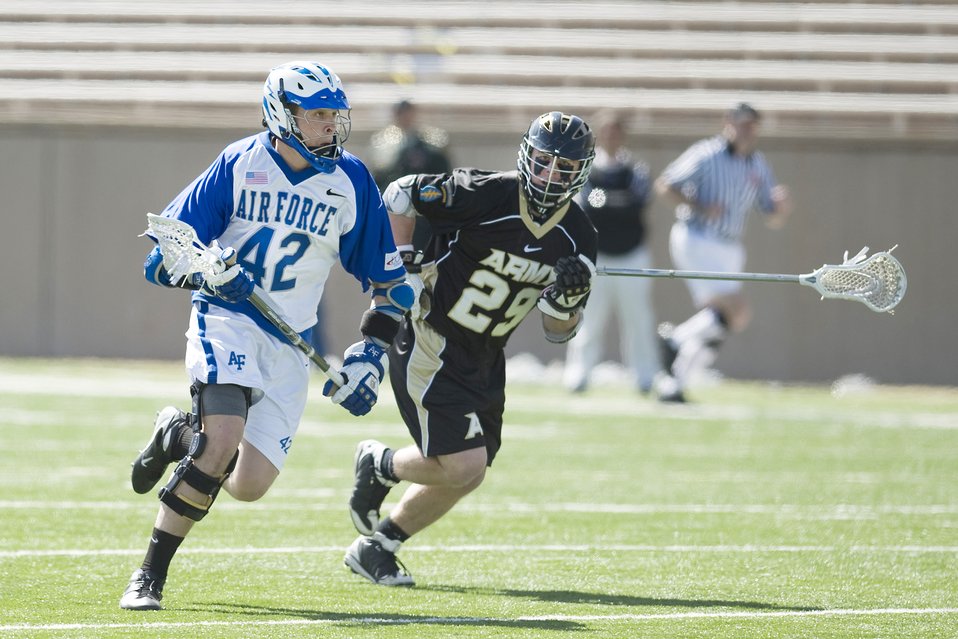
Lacrosse: Falcons defeat Black Knights

Air Force senior midfielder Jimmy Curran races past Army defender Rob McCallion during the 3rd period of the action-packed lacrosse contest held March 13, 2010, at the U.S. Air Force Academy's Falcon Stadium in Colorado. The Falcons defeated the Black Knights 8-7 in overtime. This was Air Force's first lacrosse victory against Army after 17 tries.